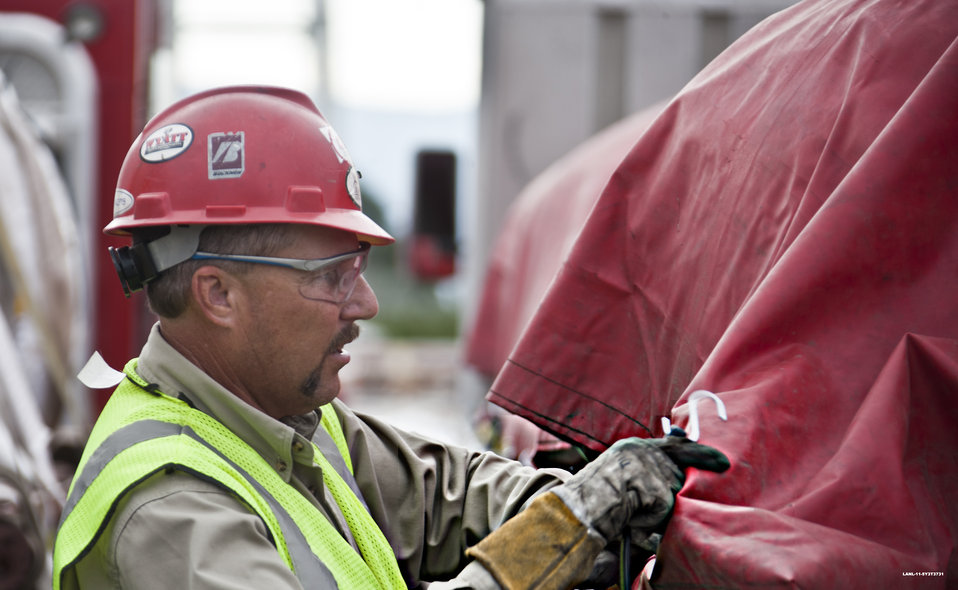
Los Alamos waste management

Waste generated by building demolition and the installation of groundwater monitoring wells has been hauled to licensed disposal facilities.